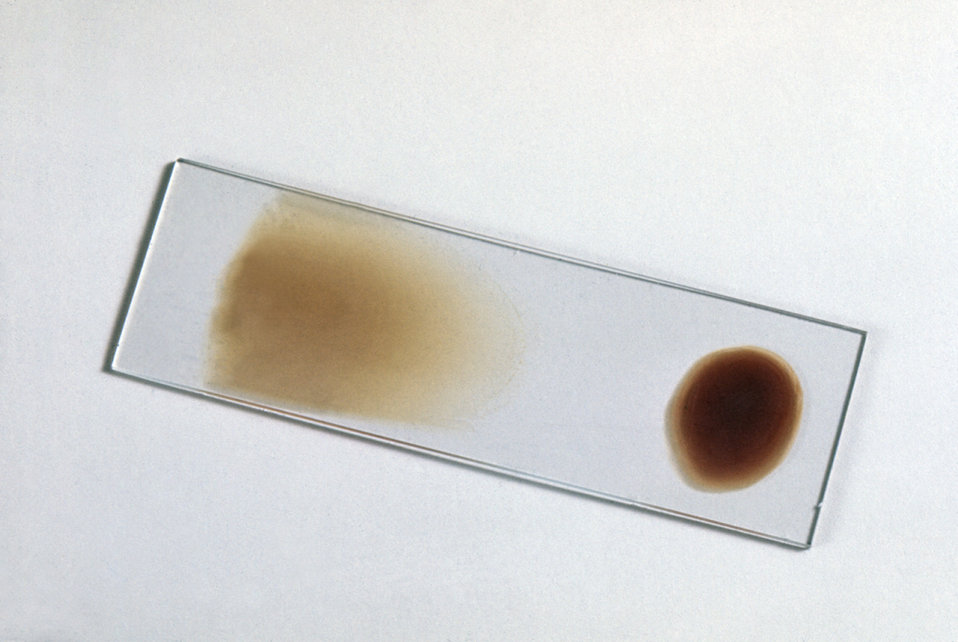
This prepared slide offers good examples of the appearance of thick and thin blood smears to be examined under the microscope.